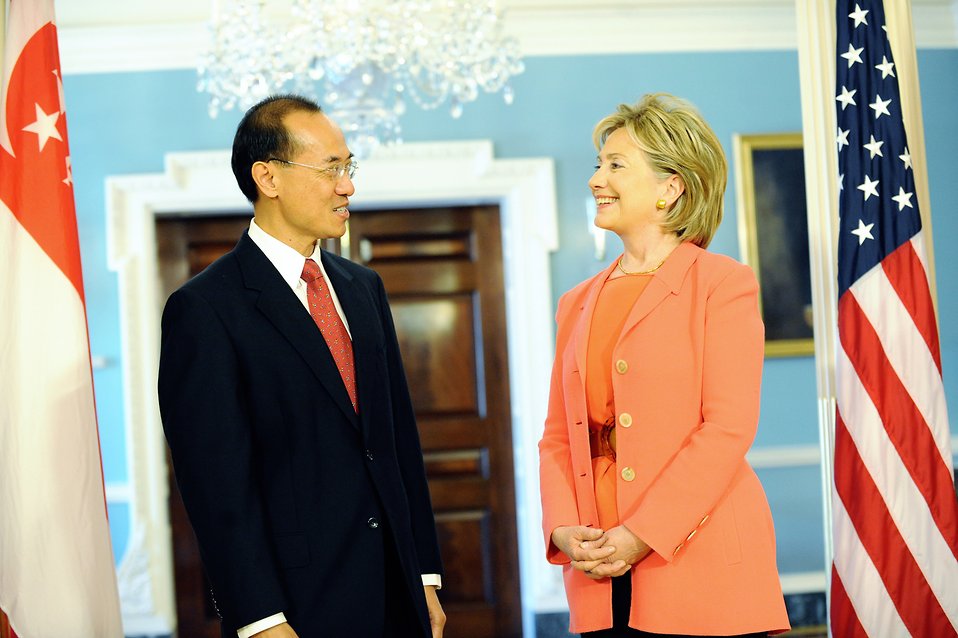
Secretary Clinton Meets With Singapore Foreign Minister

U.S. Secretary of State Hillary Rodham Clinton shakes hands with Singaporean Foreign Minister George Yeo after speaking to reporters before their meeting at the State Department in Washington, DC April 27, 2009.